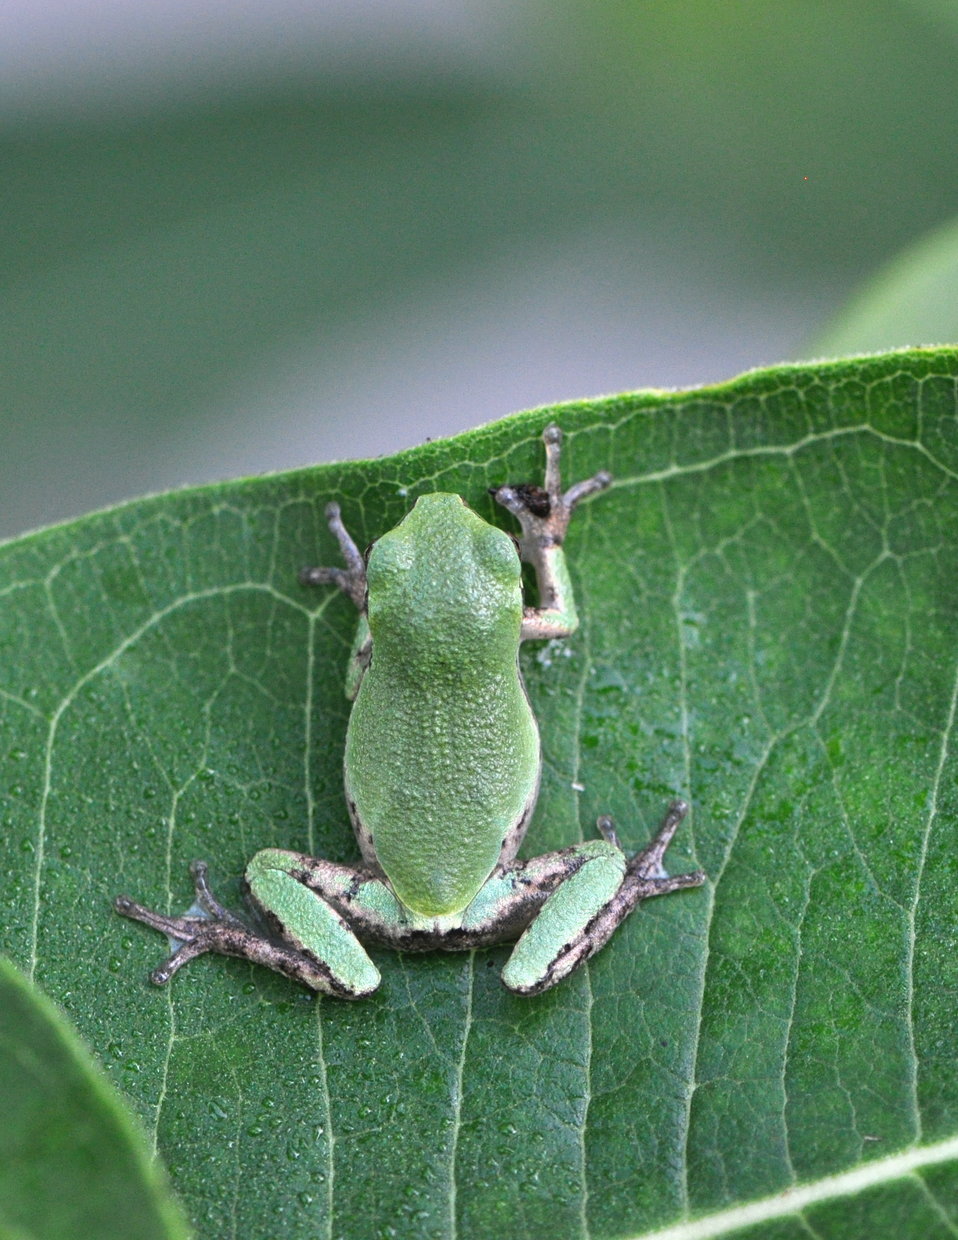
Eastern Gray Treefrog at Horicon National Wildlife Refuge